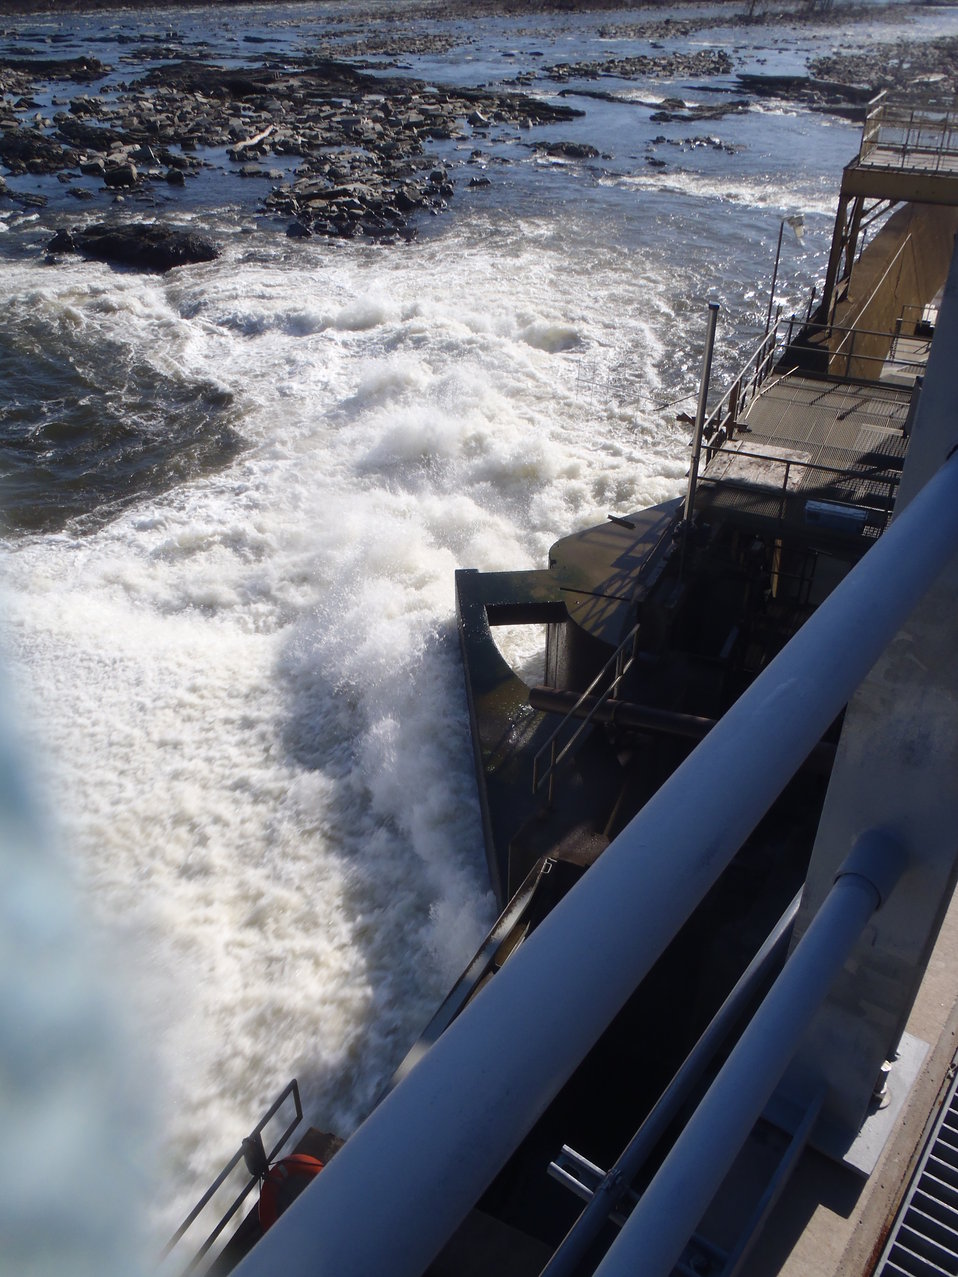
Fish lift entrance on the CT River